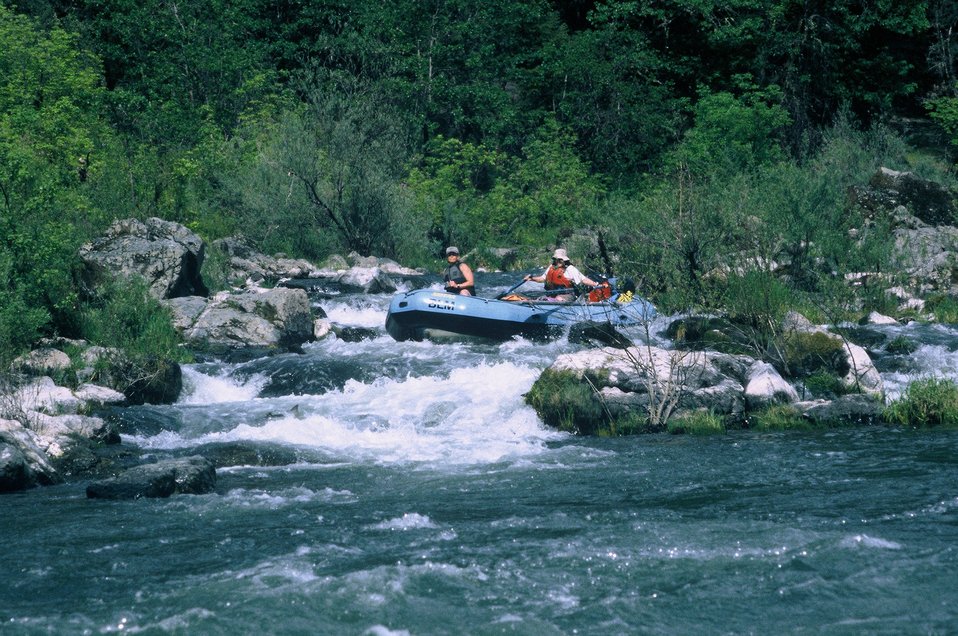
Rainie Falls Fish Ladder Wild section of the Rogue River from Grave Creek to Foster Bar. 3100 cfs at Grants Pass and 5300 at Agness.